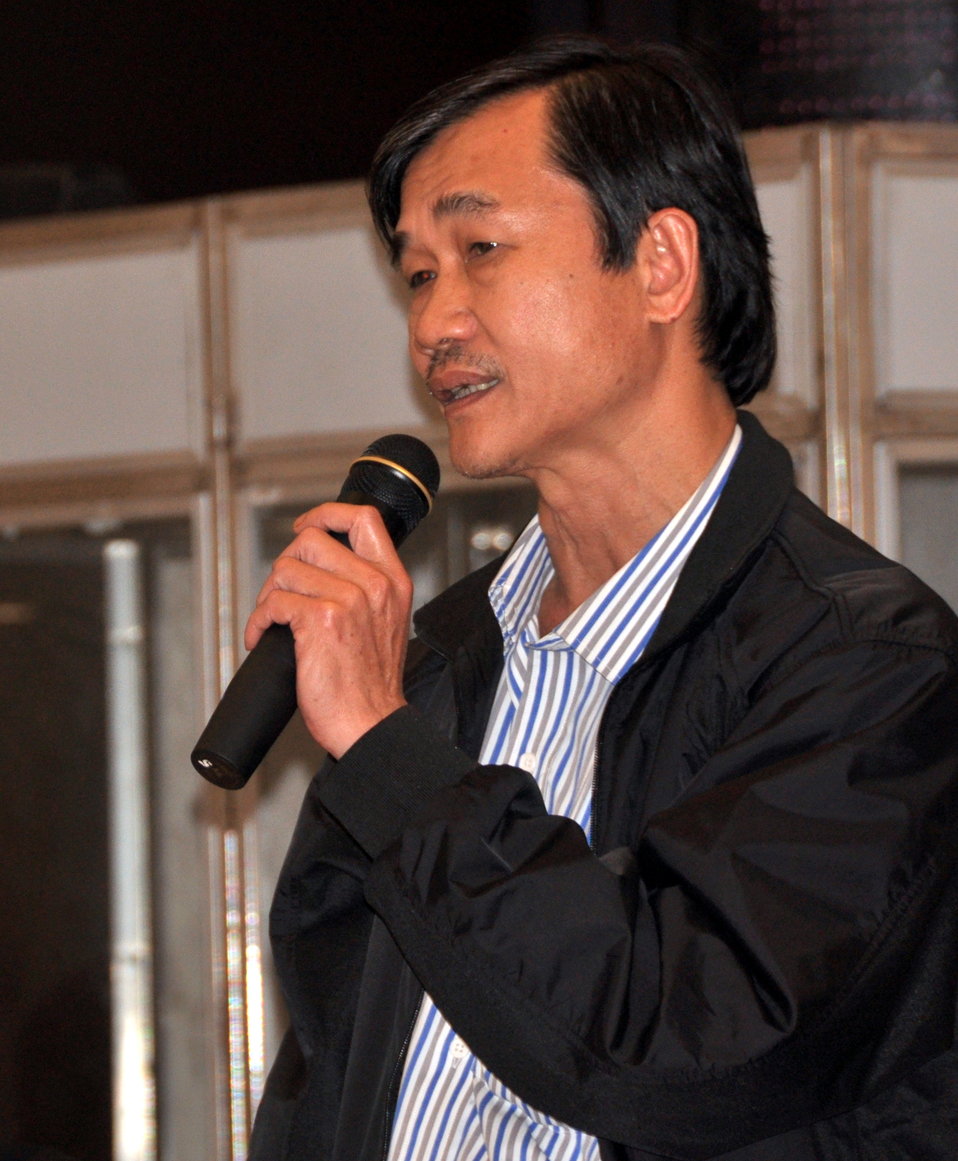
Mr. Nguyen Van Tinh, Vice Chairman of Thanh Khe District People's Committee Asks a Question at the Danang Stakholder Meeting

Environmental Remediation of Dioxin Contamination at Danang Airport

Danang, Vietnam
January 23, 2013
Photos @USAIDVietnam